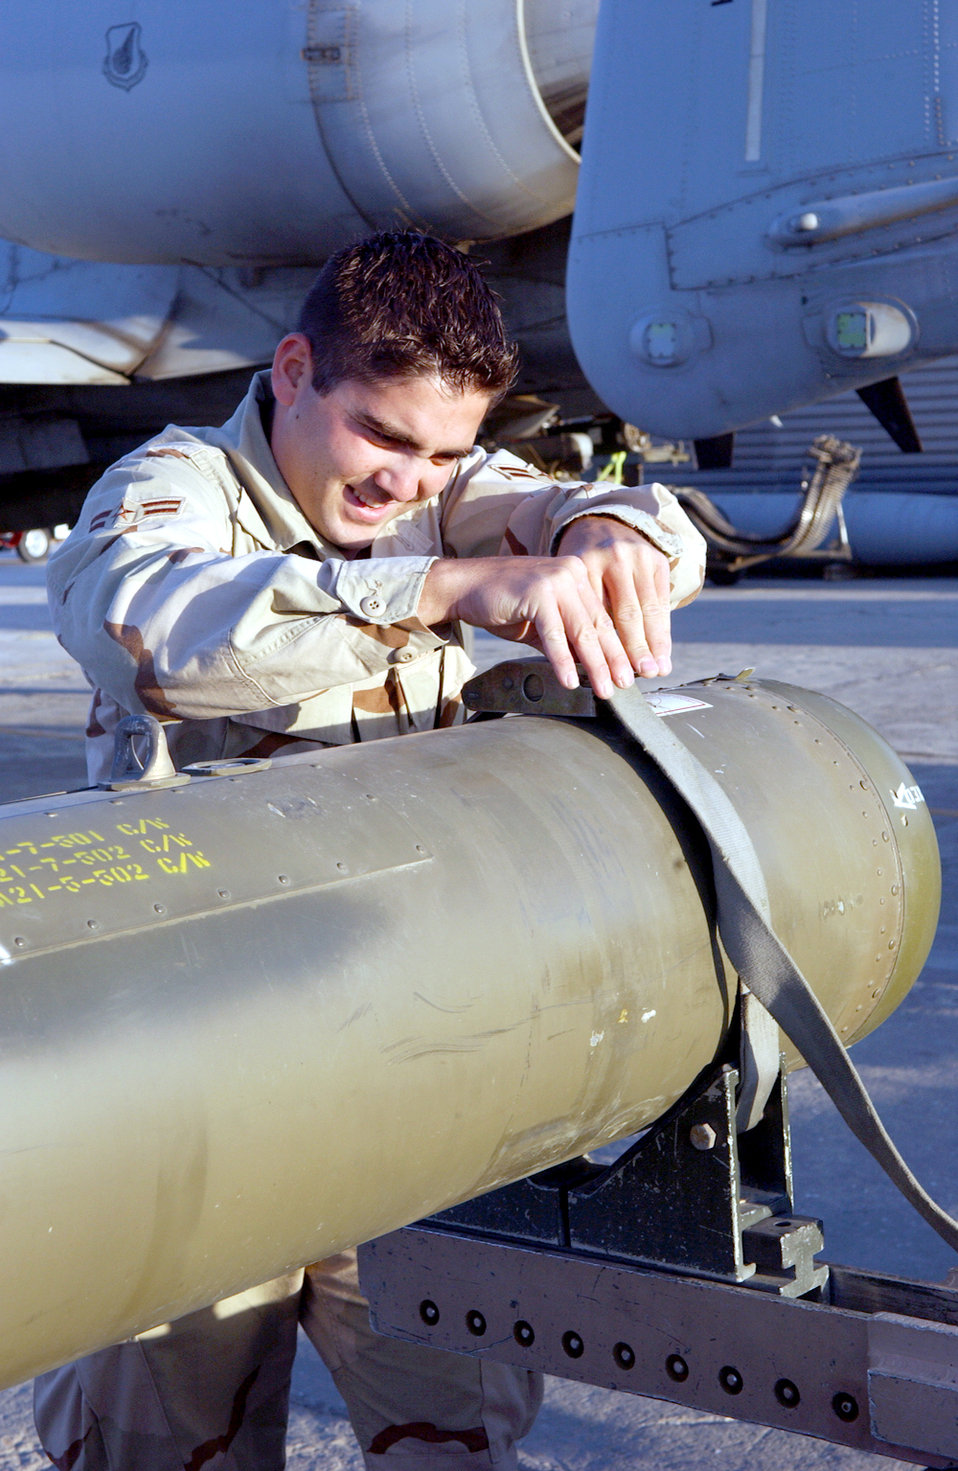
Pod prep

BAGRAM AIR BASE, Afghanistan -- Airman 1st Class Jonatan Allen-Rivera prepares a flare pod that will be loaded on an A-10 Thunderbolt II here. Airman Allen-Rivera is assigned to the 455th Expeditionary Maintenance Squadron.